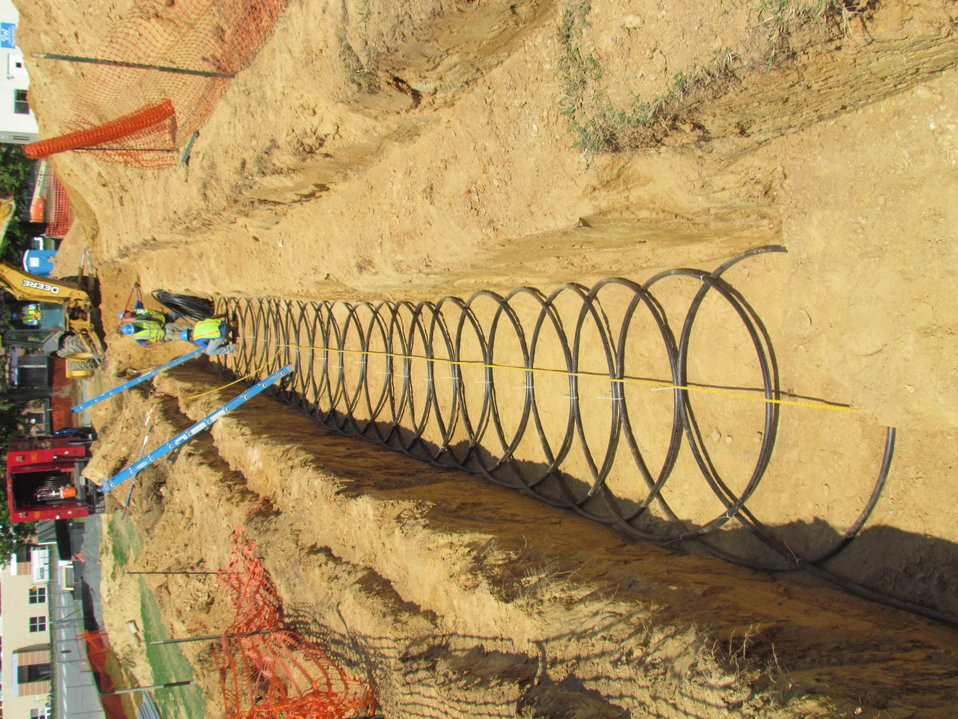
Net-Zero Energy Residential Test Facility - Photo showing 'slinky' earth coupled heat exchanger in installed in one of three identical trenches on south side of facility.